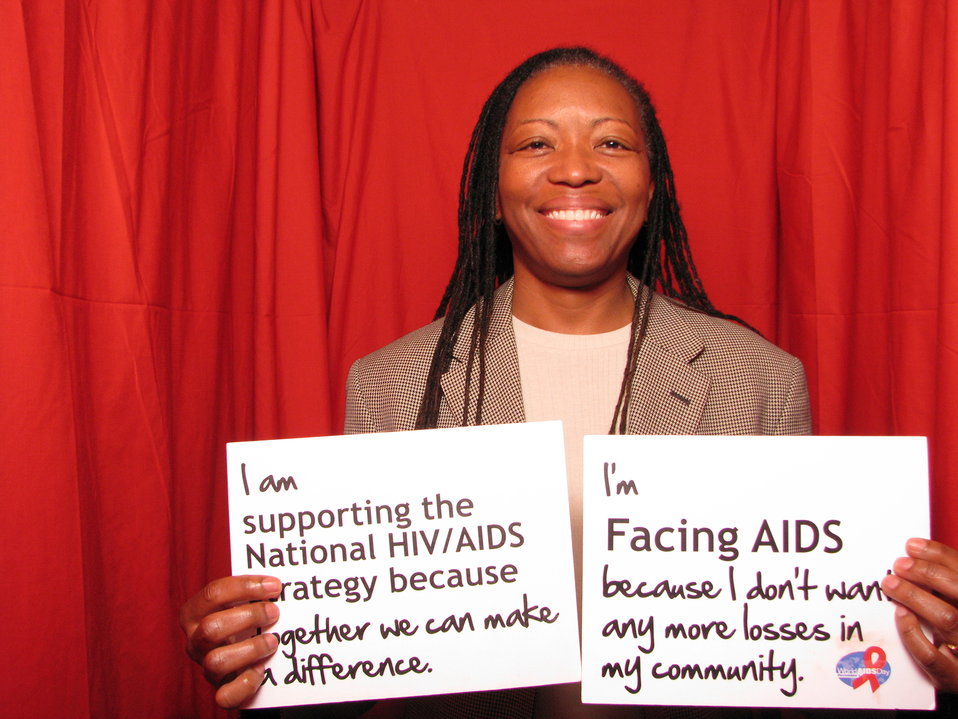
I'm FACING AIDS because I don't want any more losses in my community. I am supporting the National HIV/AIDS Strategy because together we can make a difference.

From the AIDS.gov photo booth at the U.S. Conference on AIDS, September 2010 (Orlando, FL).